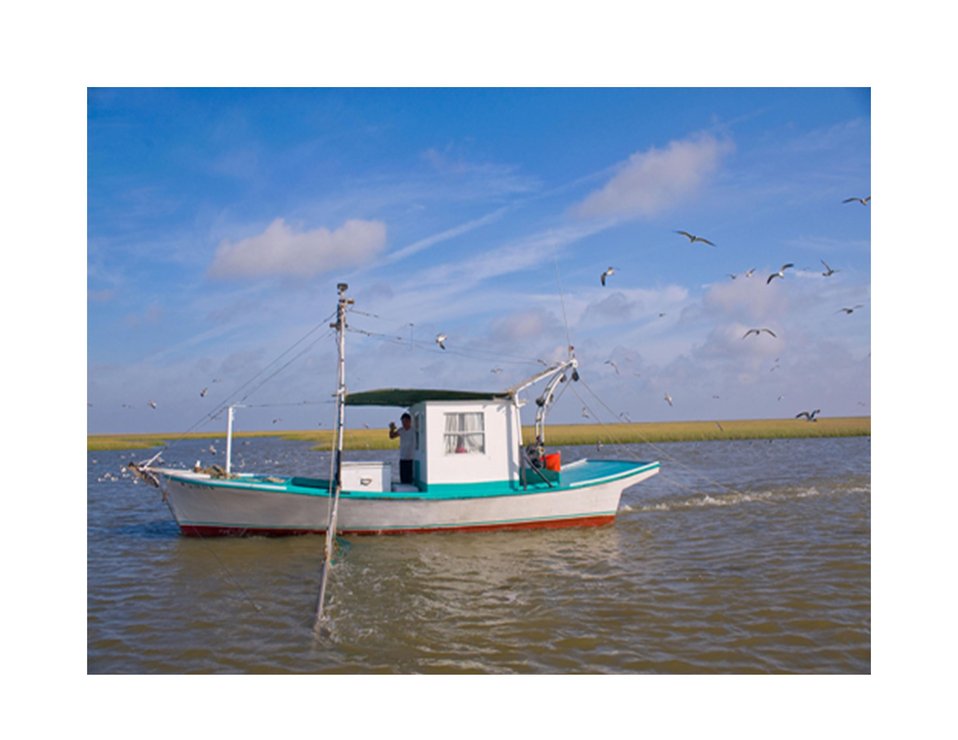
Fishing boat, Louisiana